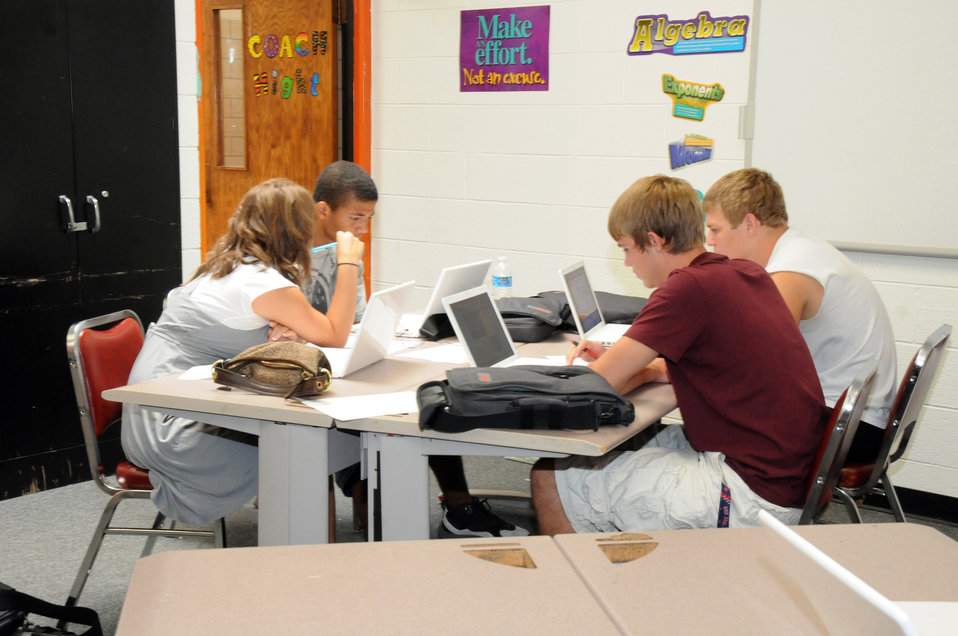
Every student at Crescent High School in Crescent, Oklahoma has access to a computer and the Internet to help with their education on August 9, 2009. The school received funding through the U. S. Department of Agriculture (USDA) Rural Development (RD) Distance Learning and Telemedicine Program (DLT) allocated through the American Recovery and Reinvestment Act of 2009 (ARRA).